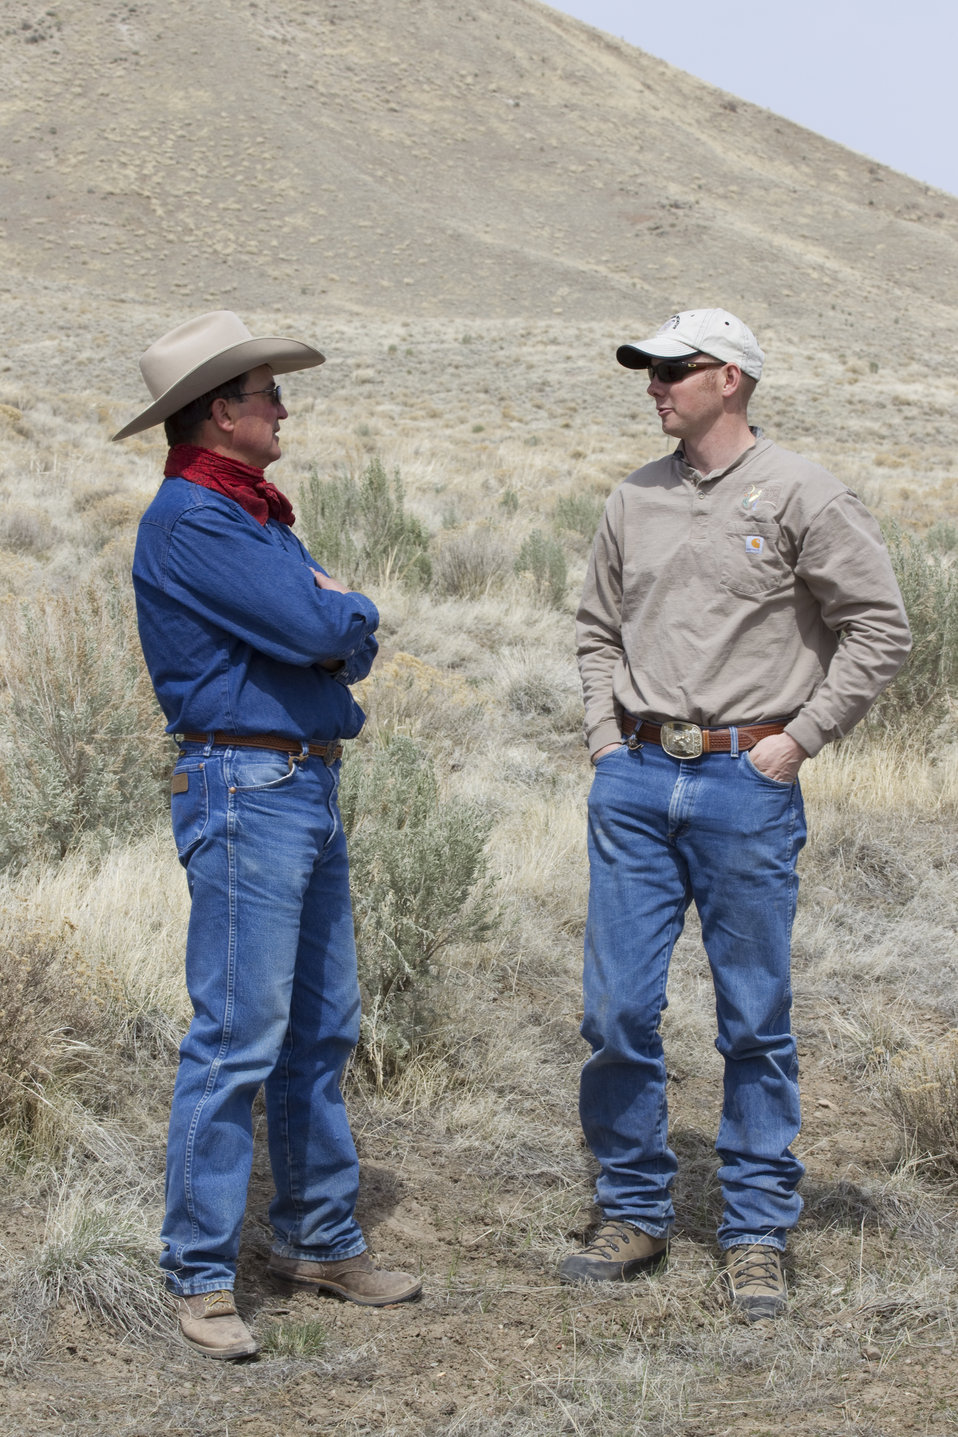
Partners for Fish and Wildlife Biologist with Landowner

Elko, Nevada.